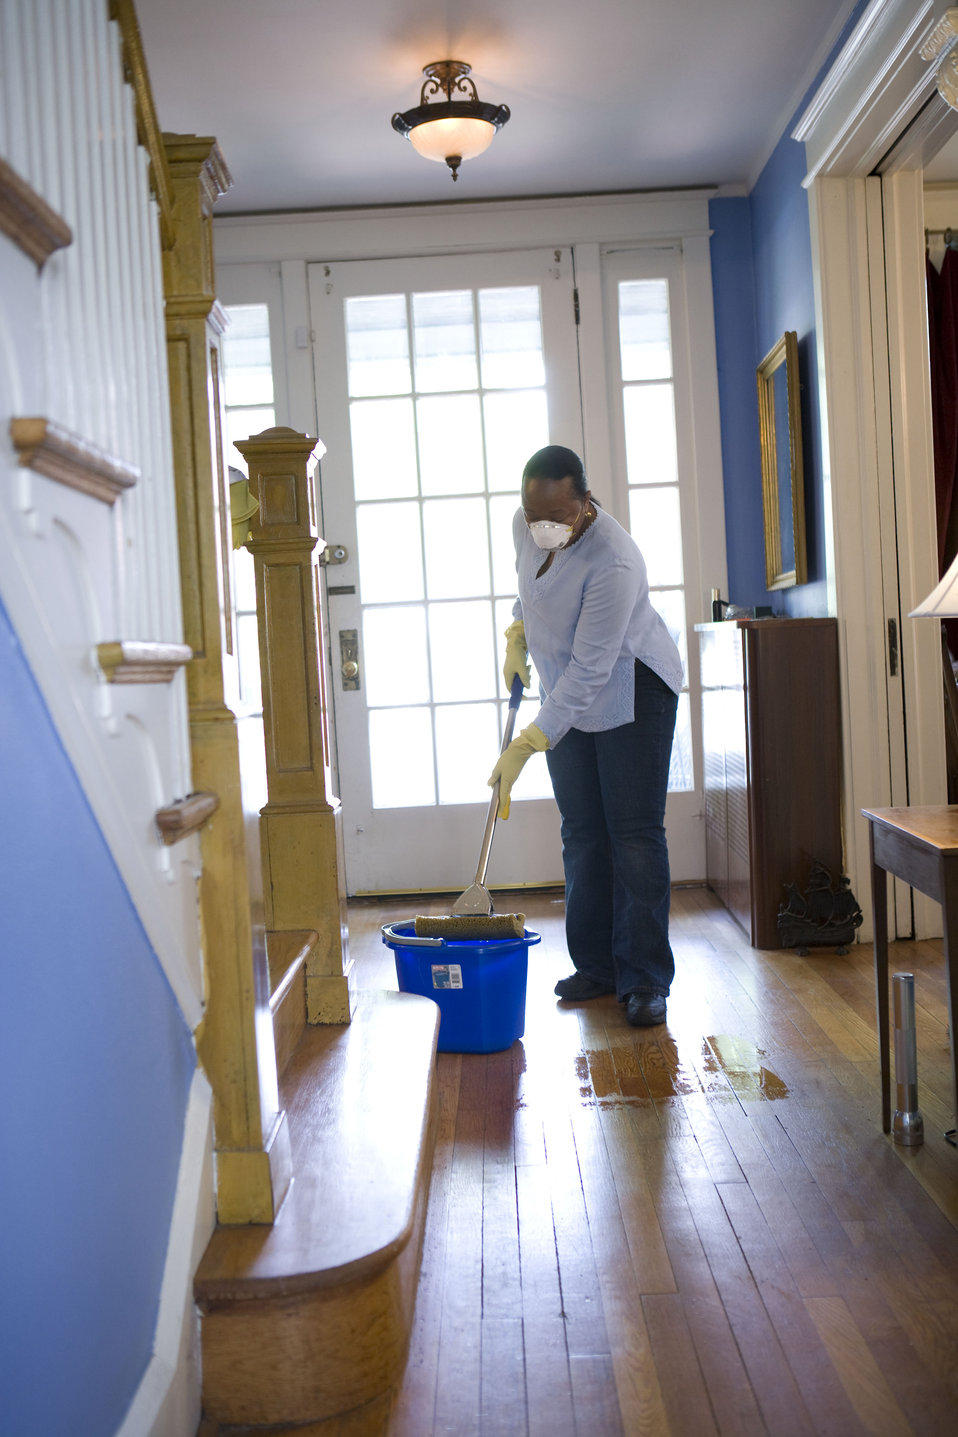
This African-American woman was in the process of damp-mopping her home's entrance way. When renovating a home, you should use a damp mop or sponge to clean dust collected on window sills, furniture, and floors, as this dust may contain asbestos or lead-based paint.